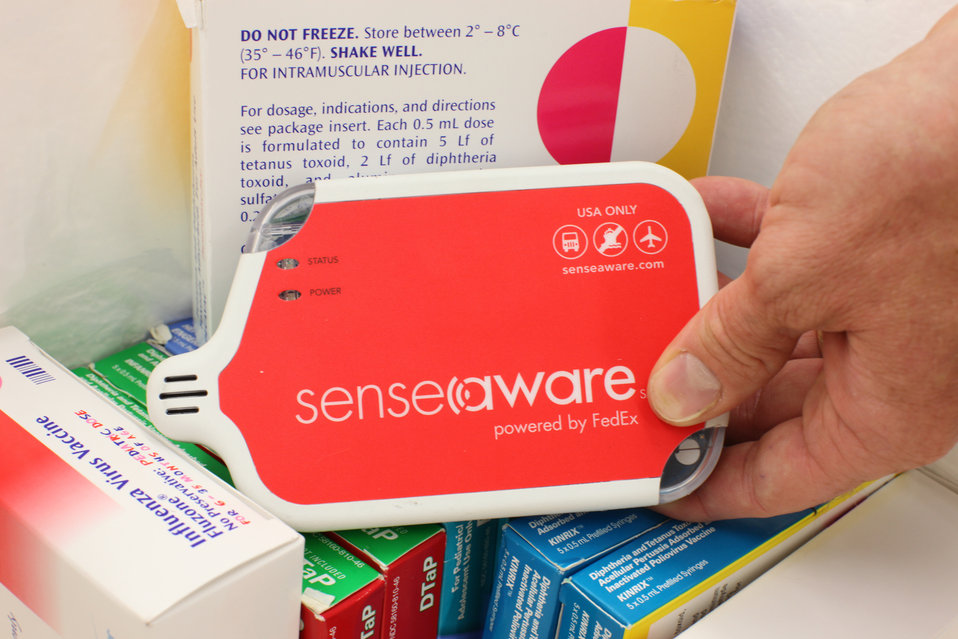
Sensaware

Developed by international shipper FedEx and tested with help from NIST, the Senseaware device connects to cell phone networks to provide users with near real-time information on a packages precise location, temperature, humidity, pressure, acceleration, elevation and exposure to light. NIST researchers plan to deploy the technology as part of a pilot project to monitor and improve climate measurements.